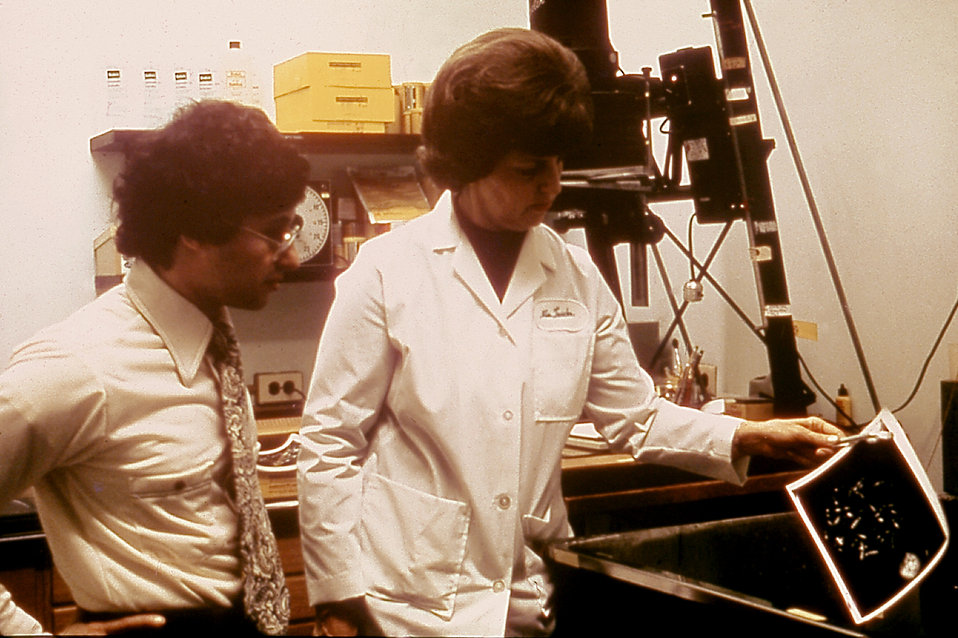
These laboratorians are shown printing out metaphase spreads during chromosomal analysis of amniotic fluid cell cultures.